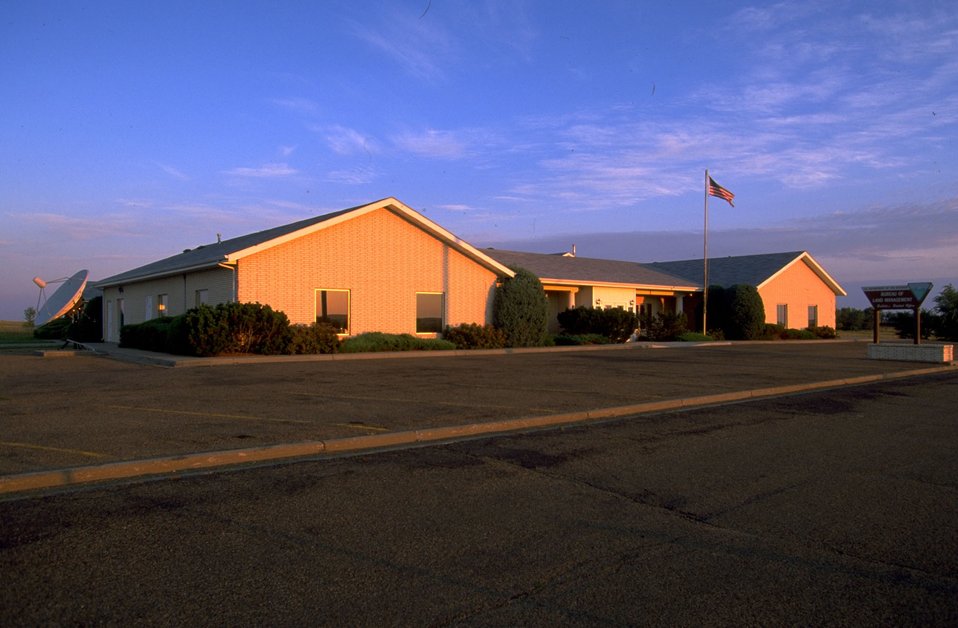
North Dakota Field Office building